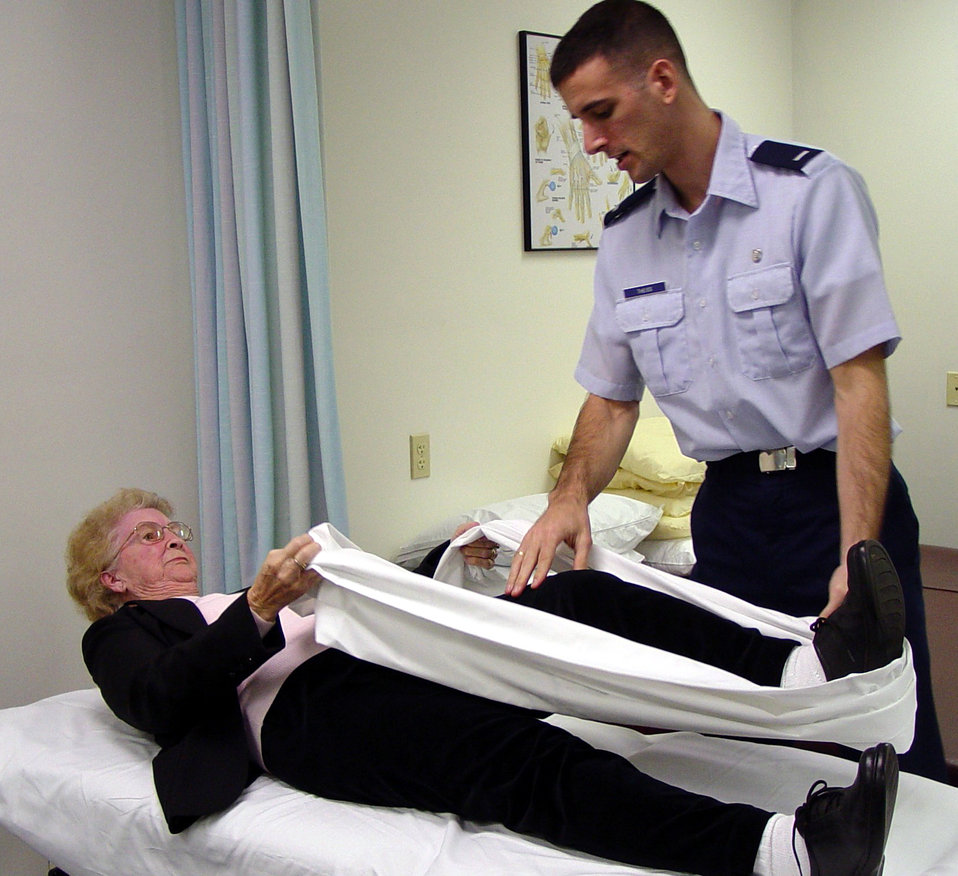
Stretching

KEESLER AIR FORCE BASE, Miss. -- Physical therapist 1st Lt. Justin Theiss helps Maurine Maddox with a hamstring-stretching exercise she can do at home. Osteoarthritis in her right knee makes it difficult for Maddox to sit and stand. She began the regimen in January and within four weeks she was 95 percent improved.